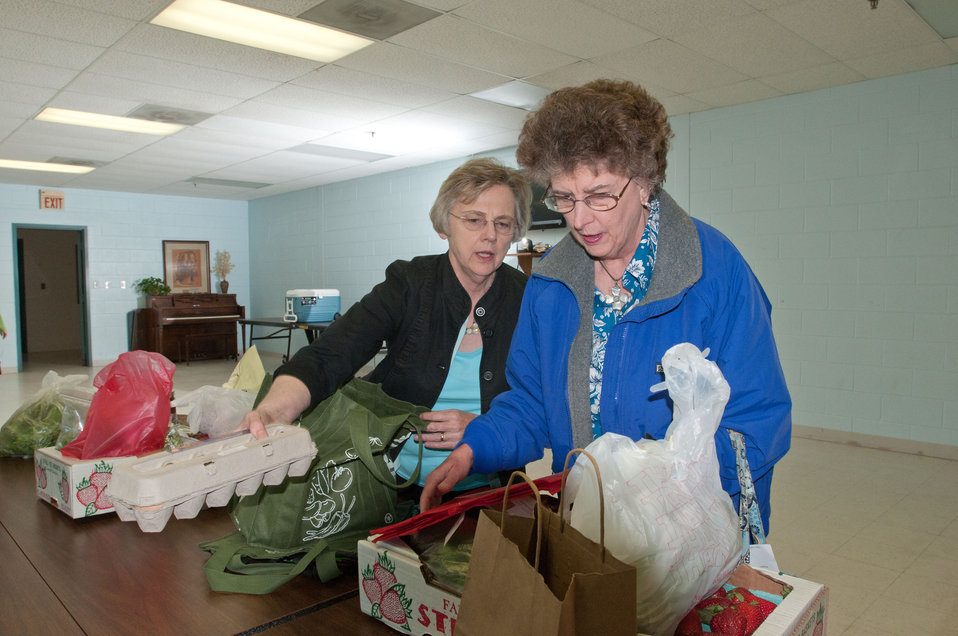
Fall Line Farms volunteer Jane Tucker (left) assists first-time user Sandra Kerr at the Bon Air United Methodist Church pick-up point, in Richmond, VA, on Thursday, May 5, 2011. Traditional food cooperatives provide identical orders. This is one of several pick-up points in the Richmond area. This local food hub offers a wide variety of household food staples and specialty items. Members can pick their customized orders from an ever changing inventory of fruits, vegetables, meats, soaps, eggs, cheeses, flowers, honey, pastas, sauces, syrups, baked goods, mushrooms, flour and grains. Suppliers post what they have on a Lulus Local Food online listing and customers can make their selection. Then every Thursday suppliers team up with other suppliers to deliver orders to, one of several pick-up points, designated by the customer in or around the Richmond area.